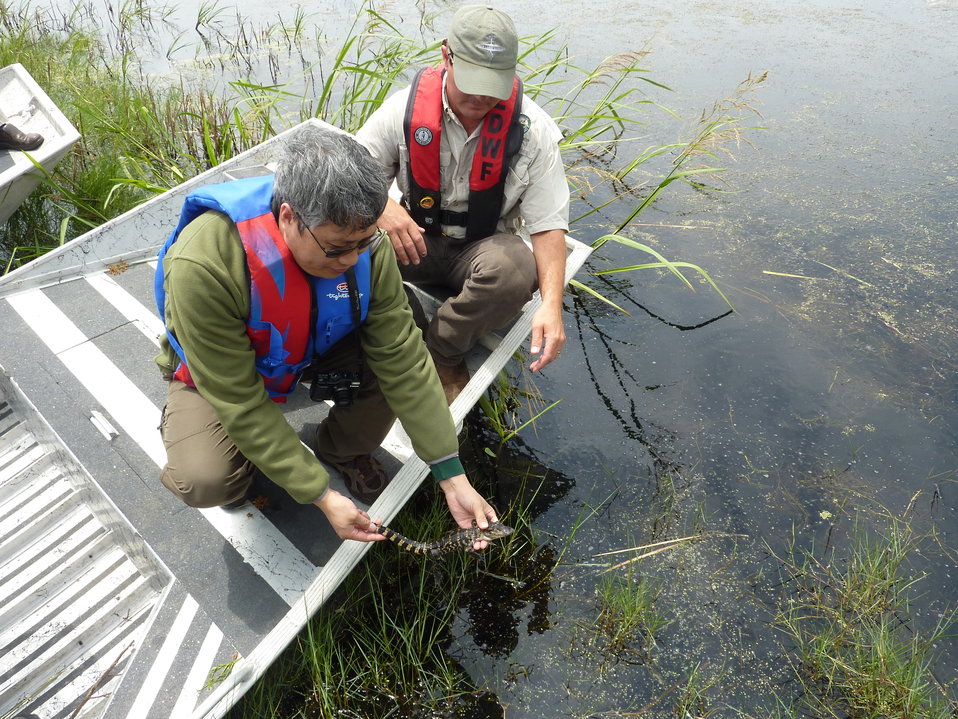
Chinese delegate releases baby alligator

One of the Chinese delegates released a juvenile American alligator as part of the reintroduction program.